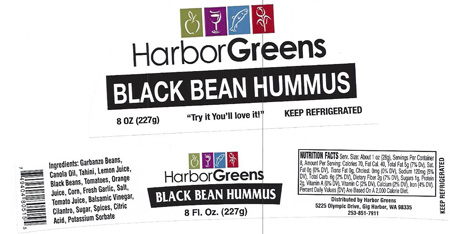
RECALLED – Hummus

July 16, 2013 – Product Recall – Hagee Foods Inc. dba Penny's Salsa Inc. Recalls Hummus Products Because of Possible Health Risk.